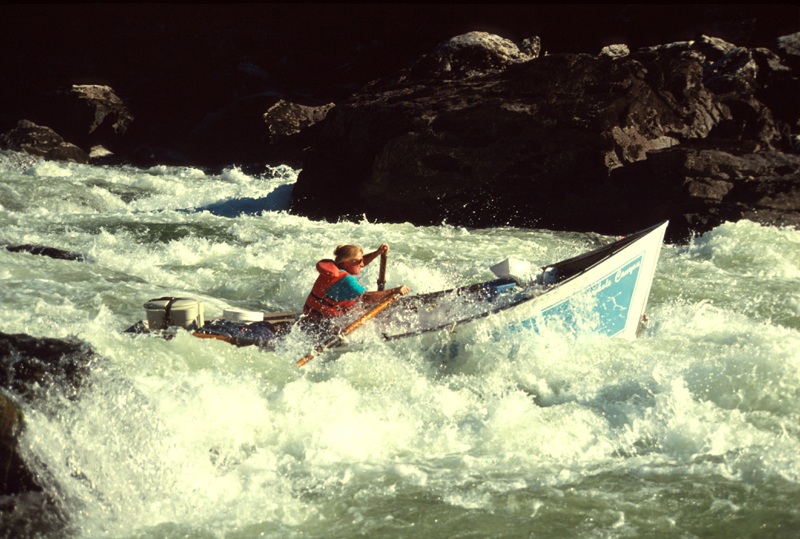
Dory Lower Salmon River Cottonwood Field Office UCSC Upper Columbia Salmon Clearwater District